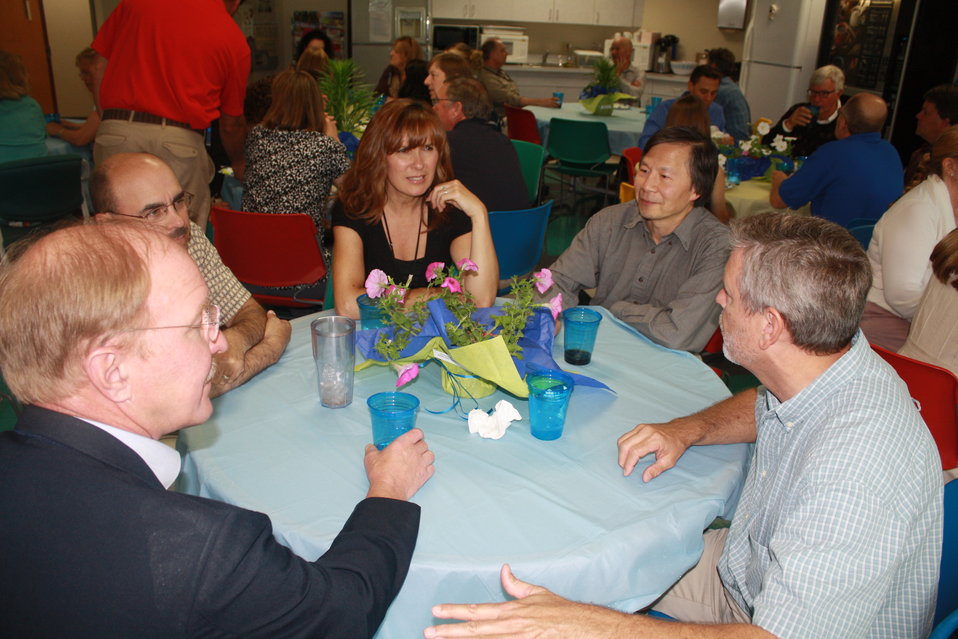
R5 Awards Ceremony